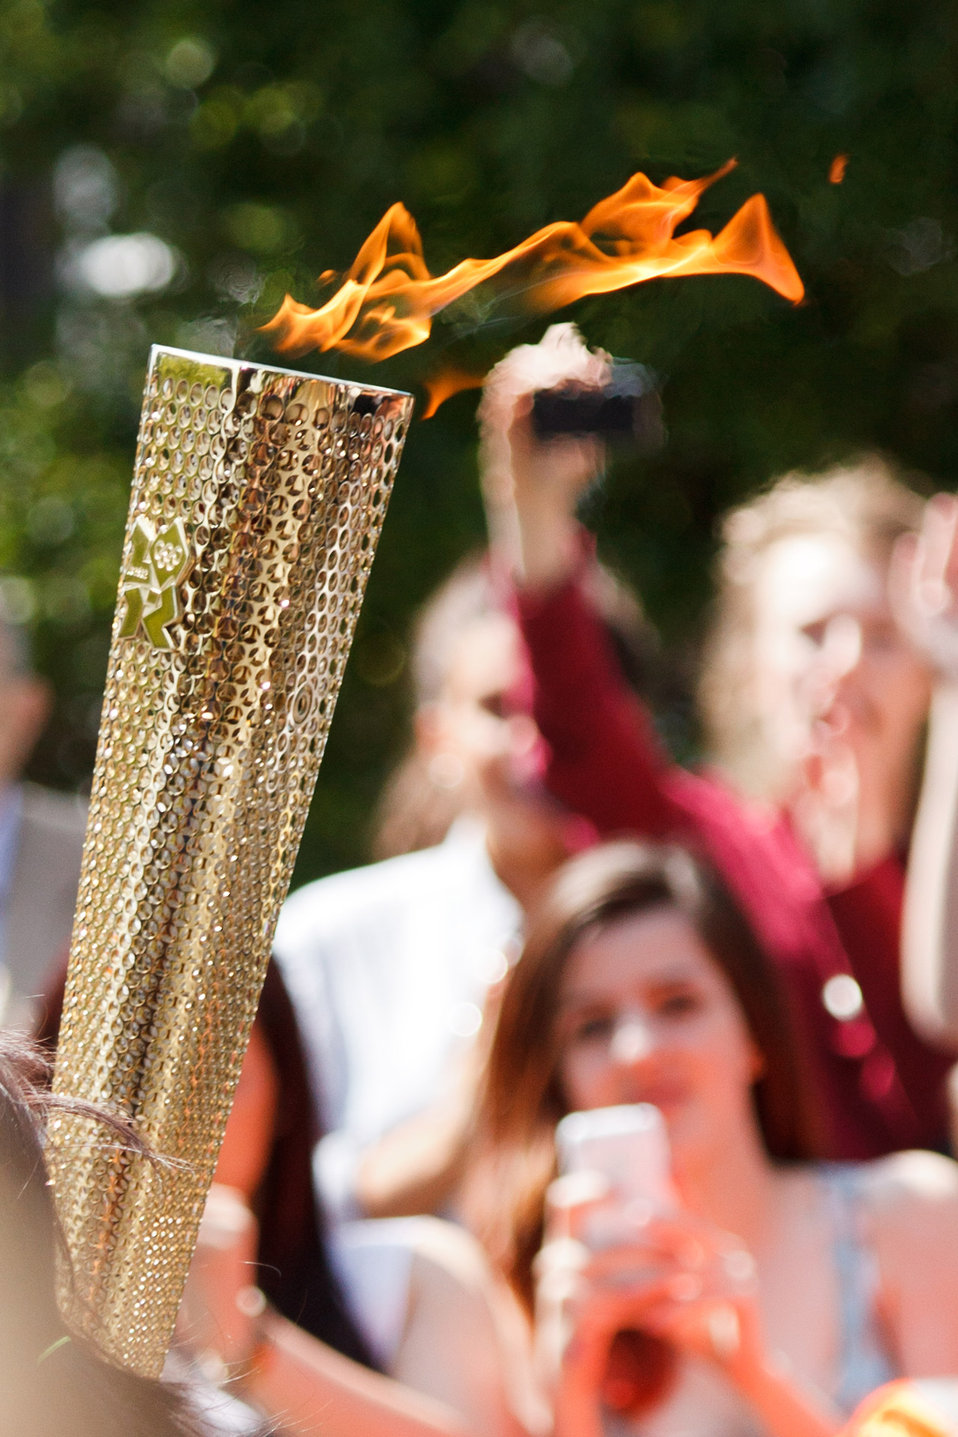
Olympic torch

London 2012 olympic torch.